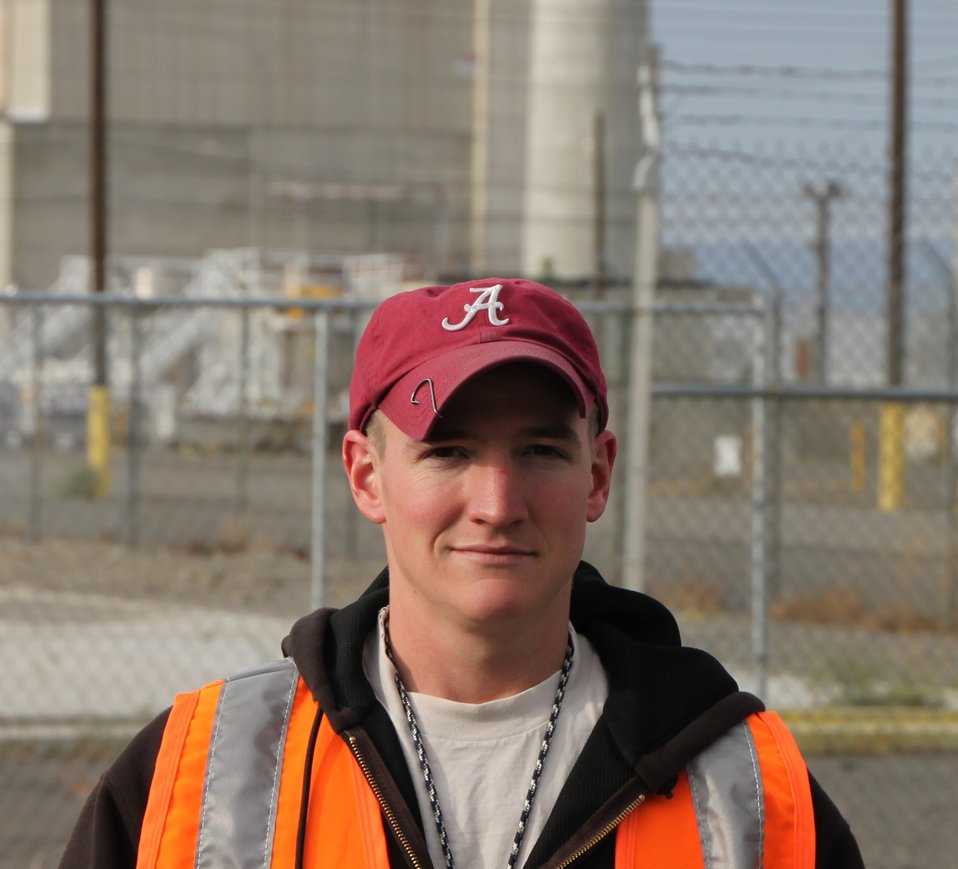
Profile 1a Pic Ty Rose